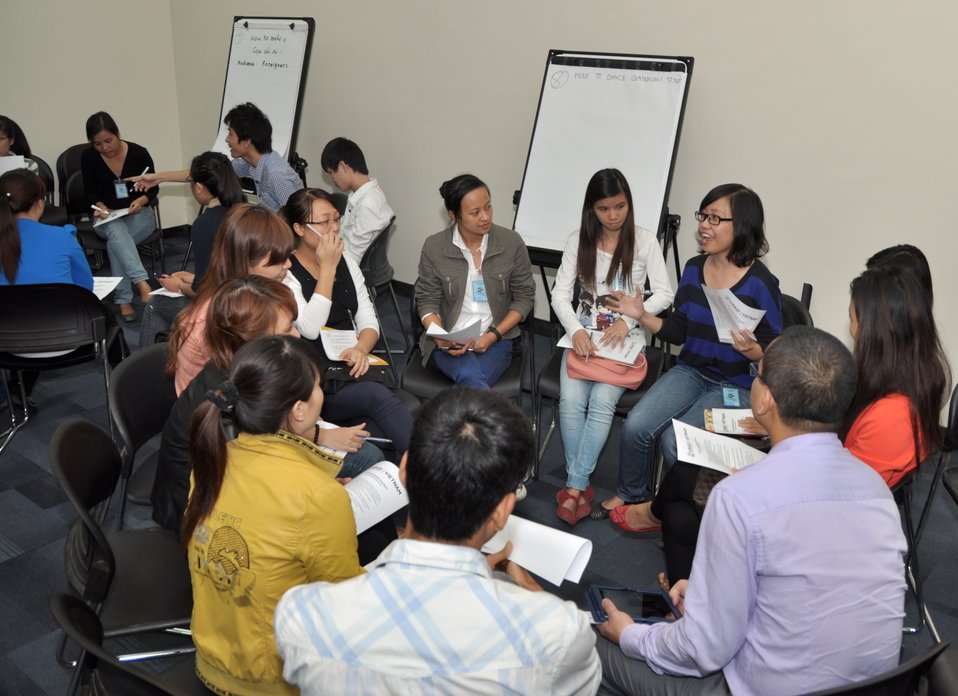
Students join the ‘USAID and Higher Education in Vietnam’ talk

Photo: @USAIDVietnam, November 19, 2012